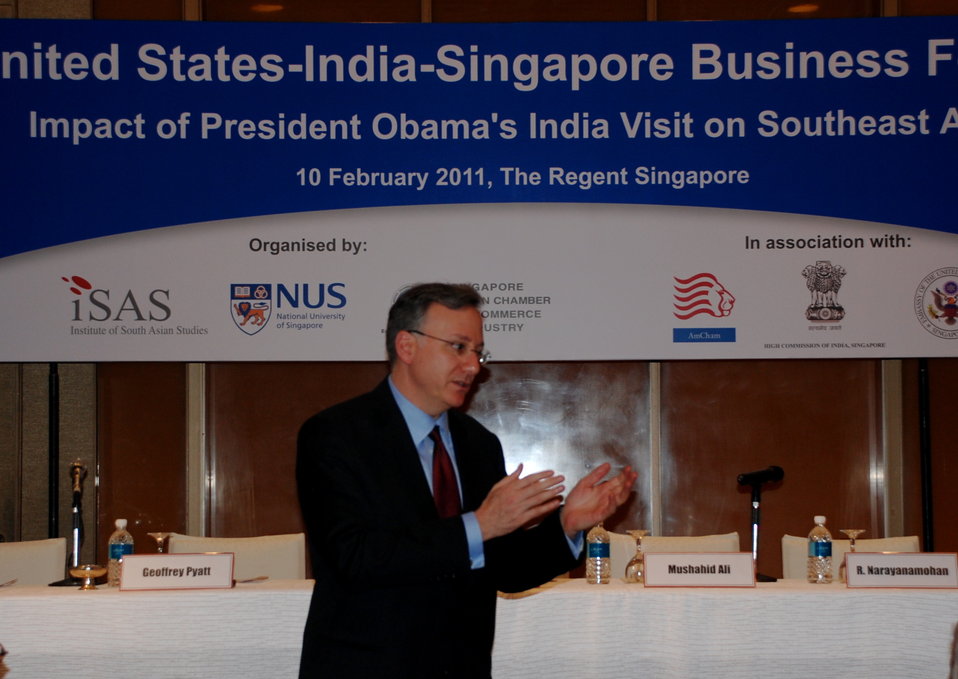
Ambassador Adelman Applauds a Participant

U.S. Ambassador to Singapore David Adelman applauds a participant at the United States-India-Singapore Business Forum in Singapore on February 12, 2011.